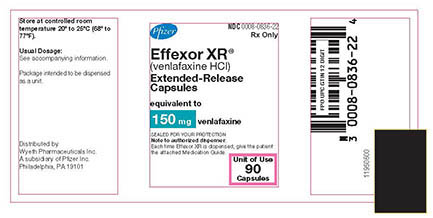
RECALLED – Venlafaxine HCl 150 mg extended-release capsules

March 6, 2014 – Product Recall – Pfizer Initiates Nationwide Voluntary Recall of Two Lots of Pfizer’s Effexor XR® 150 Mg Extended-Release Capsules and One Lot of Greenstone’s Venlafaxine HCl 150 Mg Extended-Release Capsules Due to the Possible Presence of Tikosyn® Capsules.